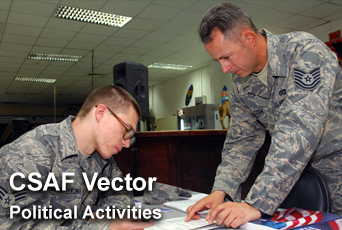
Vector focuses on political activities

The newest Chief of Staff of the Air Force's Vector discusses political activities.